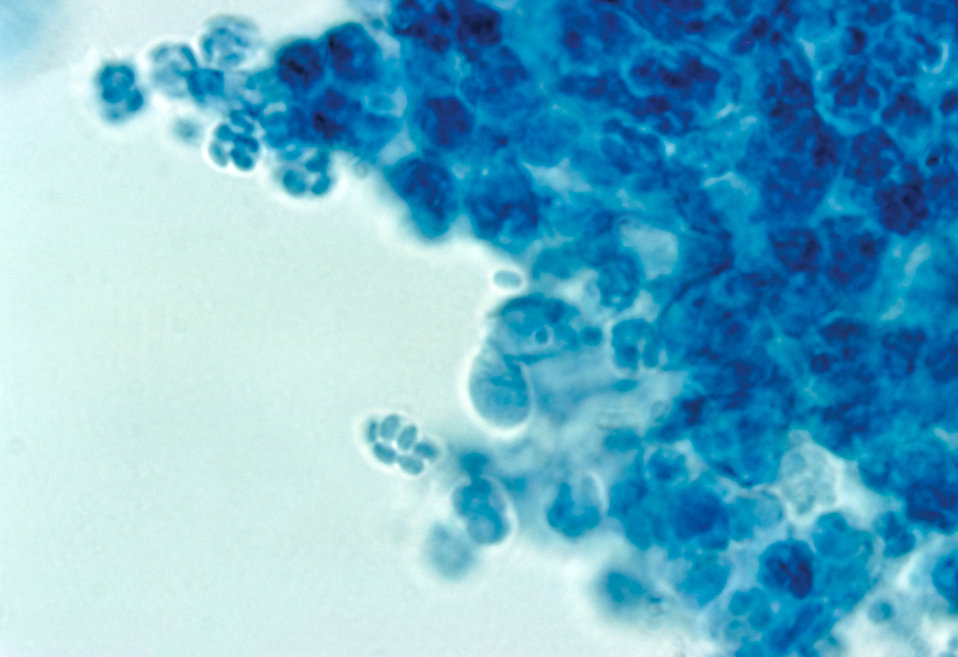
This photomicrograph shows the asci and ascospores of the fungus Arthroderma grubyi, formerly Nannizzia grubyia.